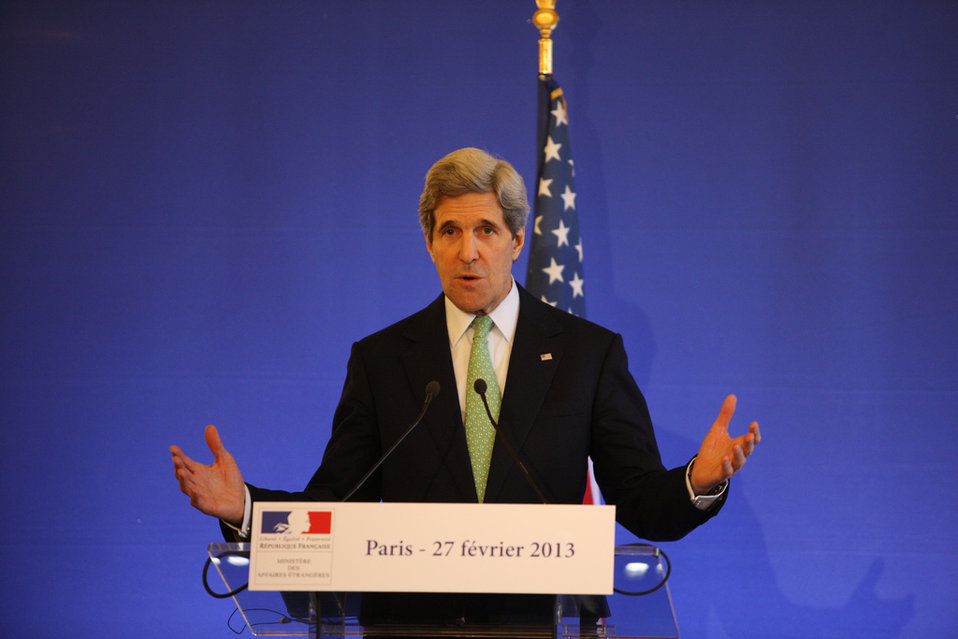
Secretary Kerry Addresses Reporters

U.S. Secretary of State John Kerry and French Foreign Minister Laurent Fabius hold a joint press conference after their working lunch in Paris, France, February 27, 2013.